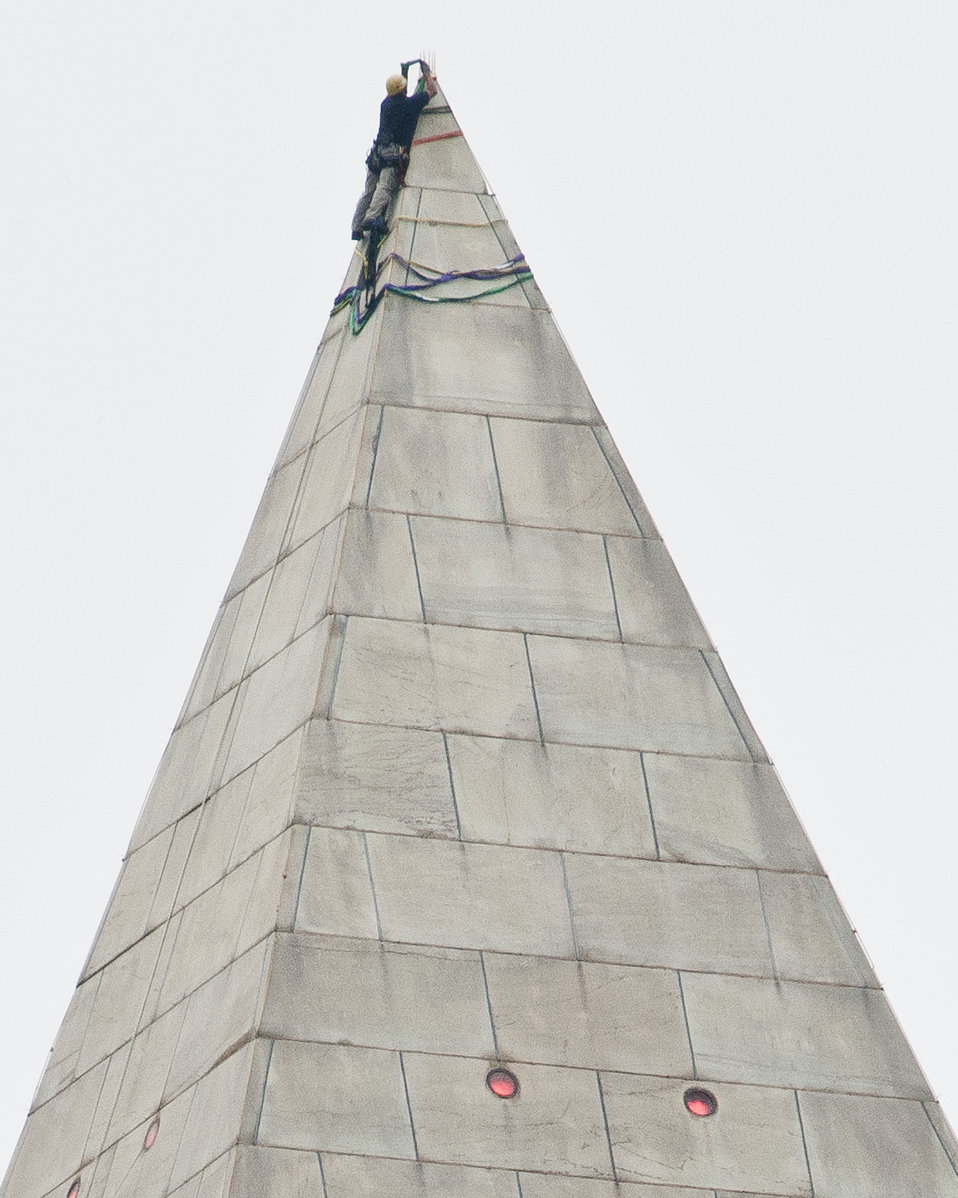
View from the U.S. Department of Agriculture Whitten Building of Dave Megerle, completing a day of rigging setup on the tip (pyramidion) of the Washington Monument on Tuesday September 27, 2011. The rigging will be used by a four-person that will rappel down the four sides of the monument and help document damage from the August 23, 2011 5.8-magnitude earthquake and following storm weather. They will also fill cracks with sealant to help protect it from water and ice damage until repairs can be completed.